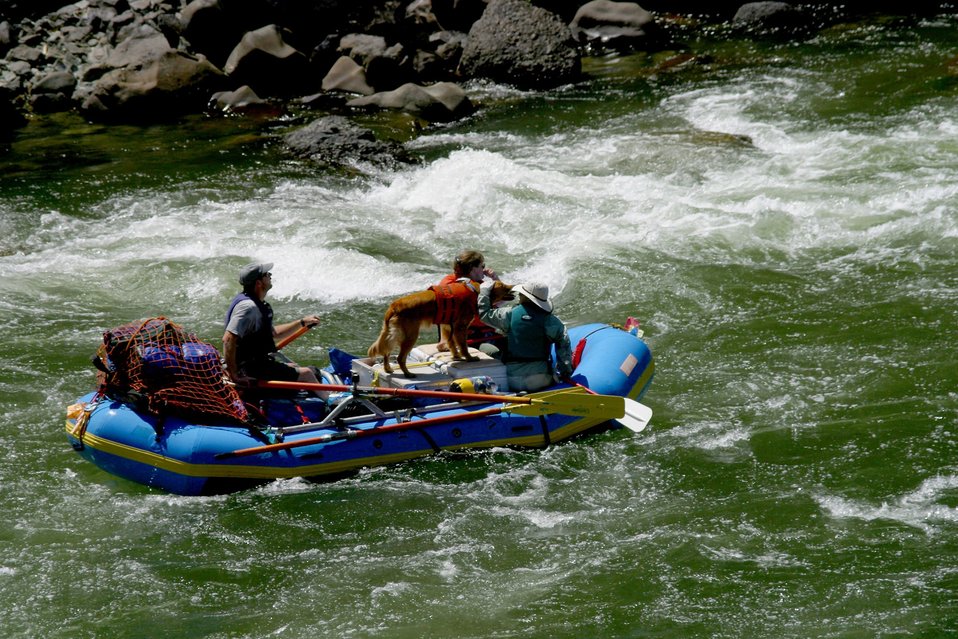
Blossom Rapids.